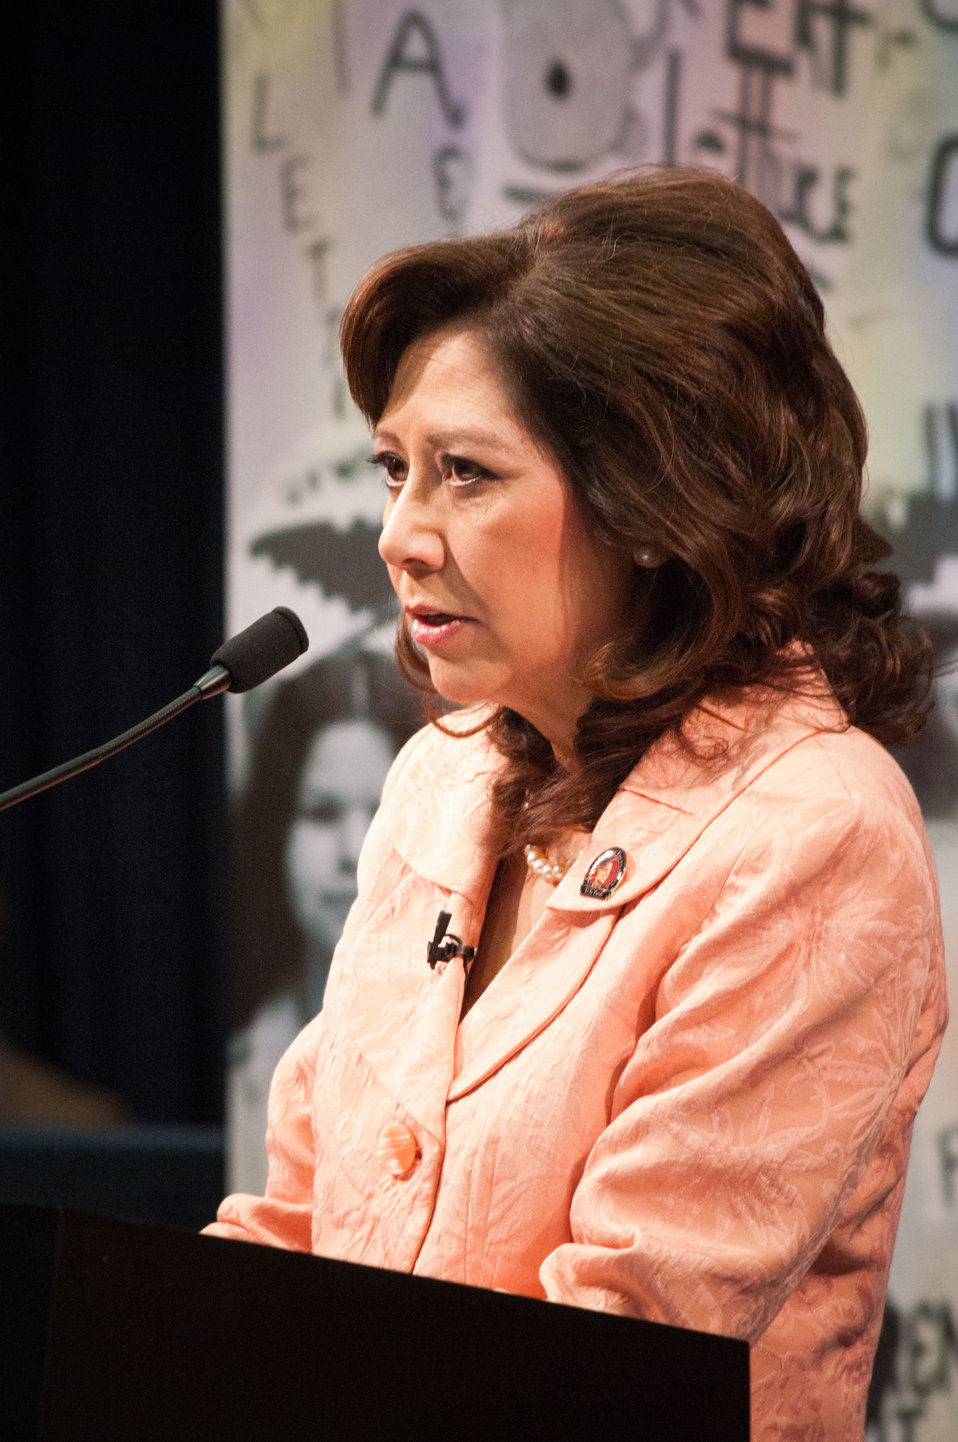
Labor Secretary Hilda Solis spoke of the diligence, dedication and effort by Cesar Chavez, a Mexican-American labor leader who used non-violent methods to fight for the rights of migrant farm workers in the southwestern United States during the dedication of the Cesar E. Chavez Memorial Auditorium at the United States Department of Labor in Washington, D.C., Monday, March 26, 2012.
Chavez founded the Cesar Chavez Foundation, a group that advocates for the rights of farm workers, acting to increase wages and improve the working conditions and safety of farm workers.